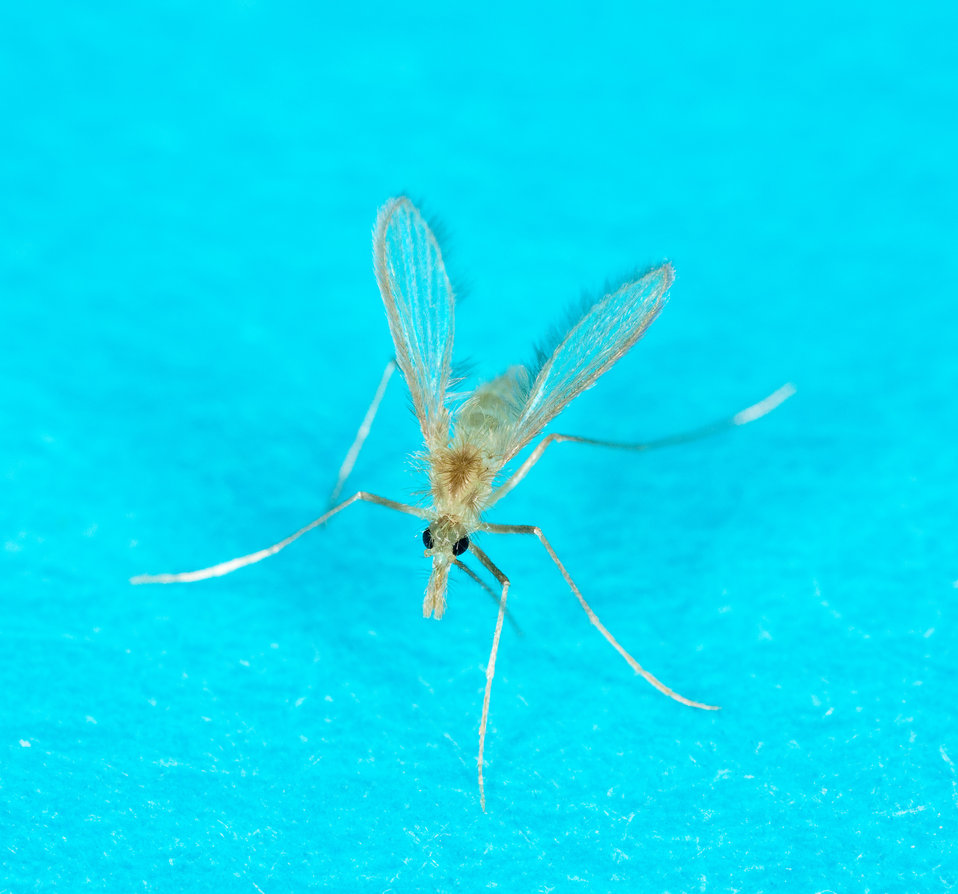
An image of a sand fly (Phlebotomus papatasi) on May 23, 2012. The sand fly can transmit parasites that cause leishmaniasis, a disease that can cause permanent skin damage and severe organ damage.